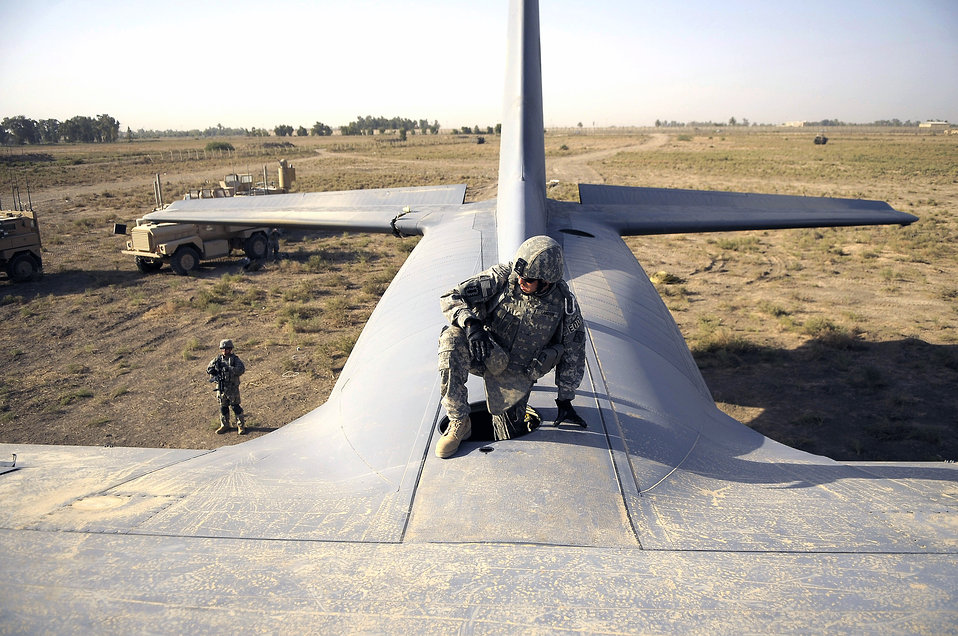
Ready to blow it up

Before placing explosive charges around the wings, Staff Sgt. Joshua Langdon climbs through the top hatch of a C-130 Hercules in Baghdad, Iraq, July 7. He is from the 447th Air Expeditionary Group's Explosive Ordnance Disposal team.